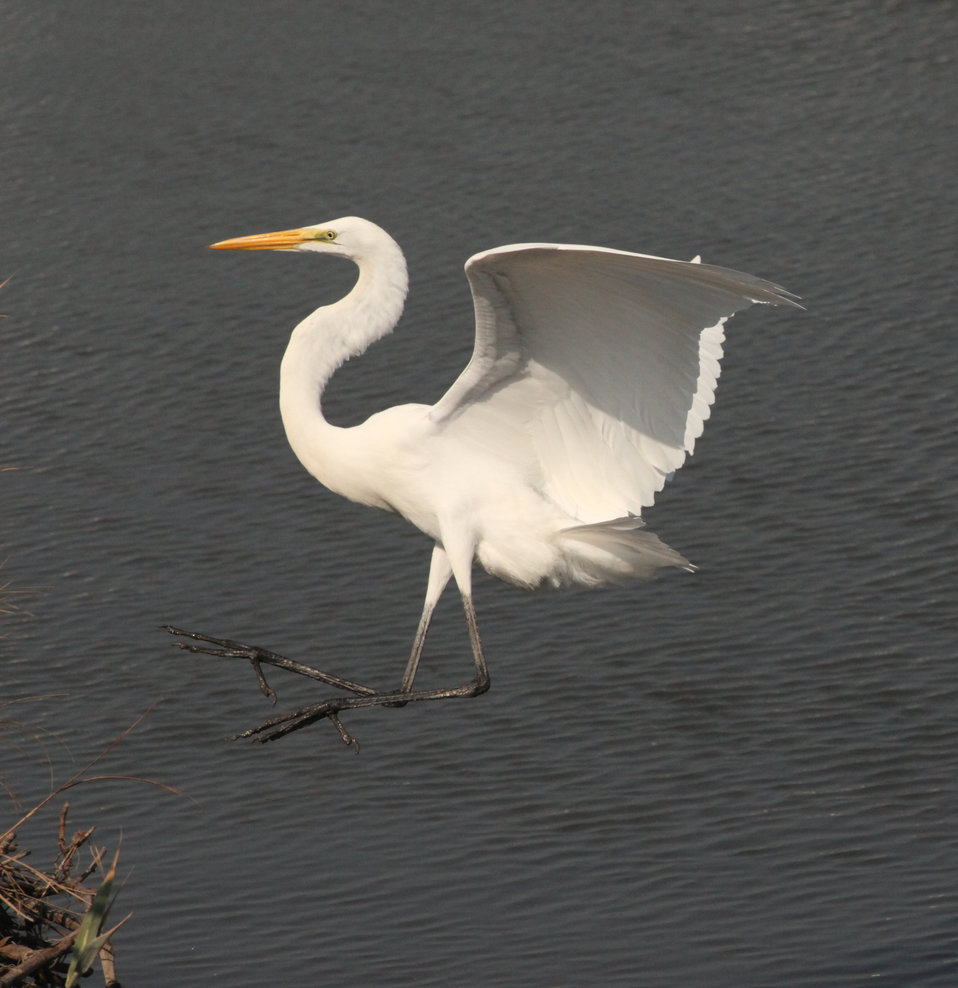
Photo of the Week - Great Egret at Forsythe National Wildlife Refuge, NJ

Photo of the Week - 09/09/10

A great egret landing at Edwin B. Forsythe National Wildlife Refuge in New Jersey.